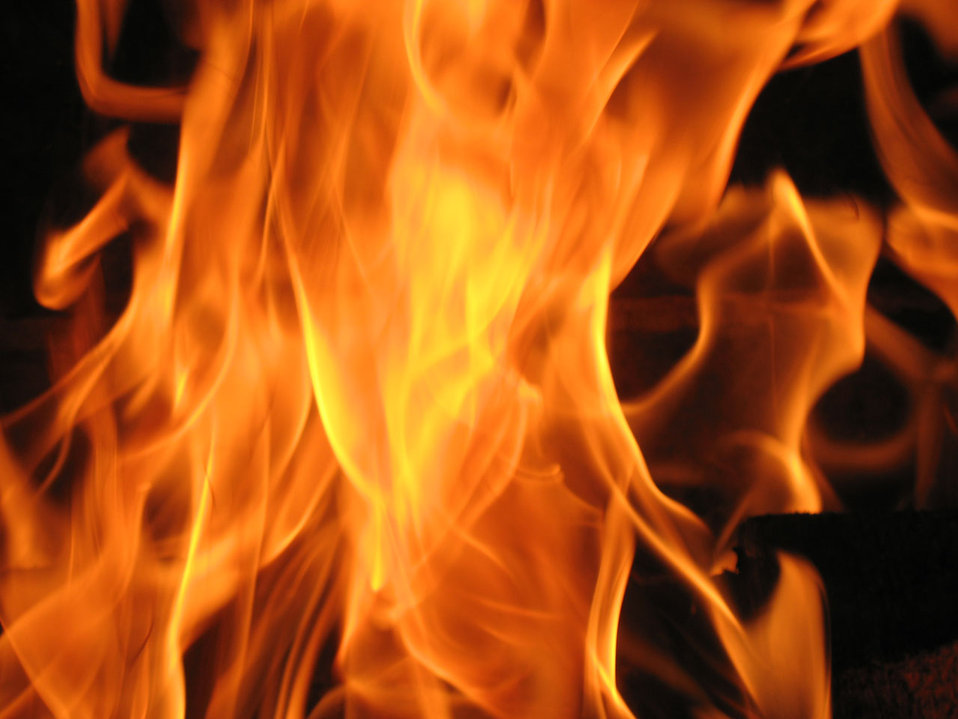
Flames

Fire and flames.